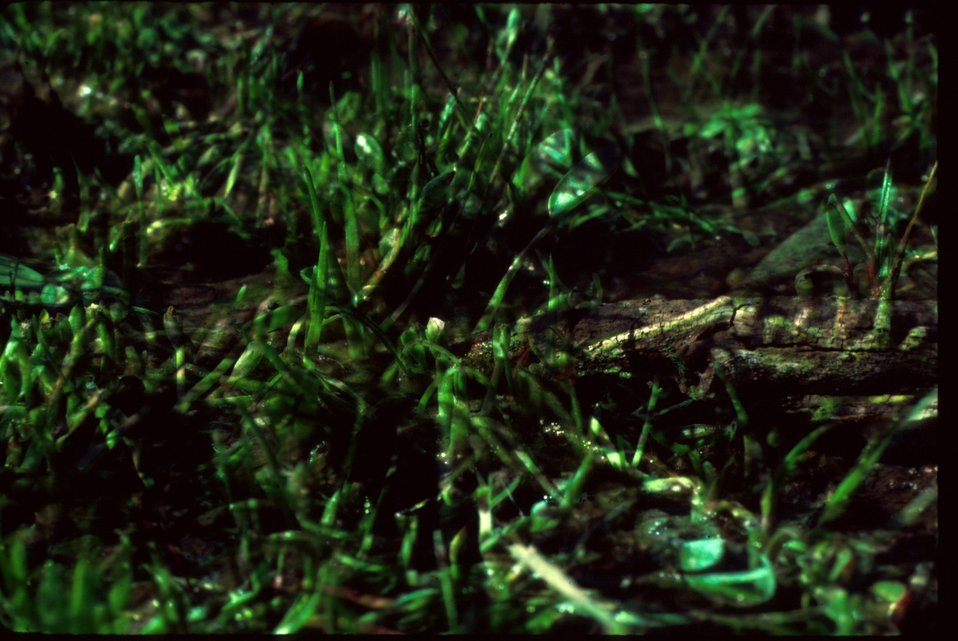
Limnosella aquatica Wildflower